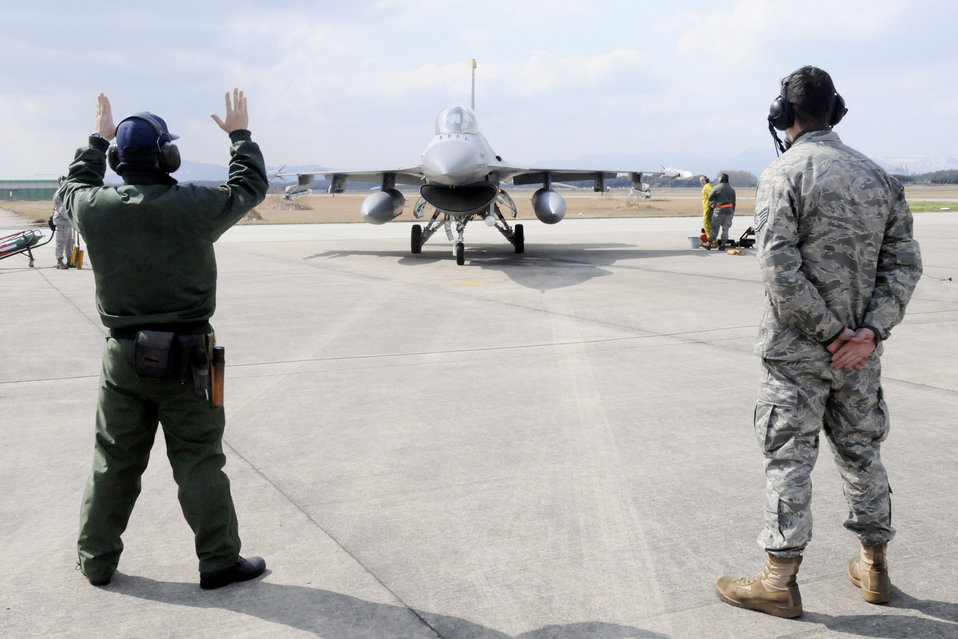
ATR exercise

Japan Air Self Defense Force Senior Airman Naoki Yamashita marshals in an F-16 Fighting Falcon under the watch of Staff Sgt. Christopher Audet during an aviation training relocation exercise March 11, 2010, at Tsuiki Air Base, Japan. Airman Yamashita is an F-15 crewchief. Sergeant Audet is a 35th Aircraft Maintenance Squadron crewchief.